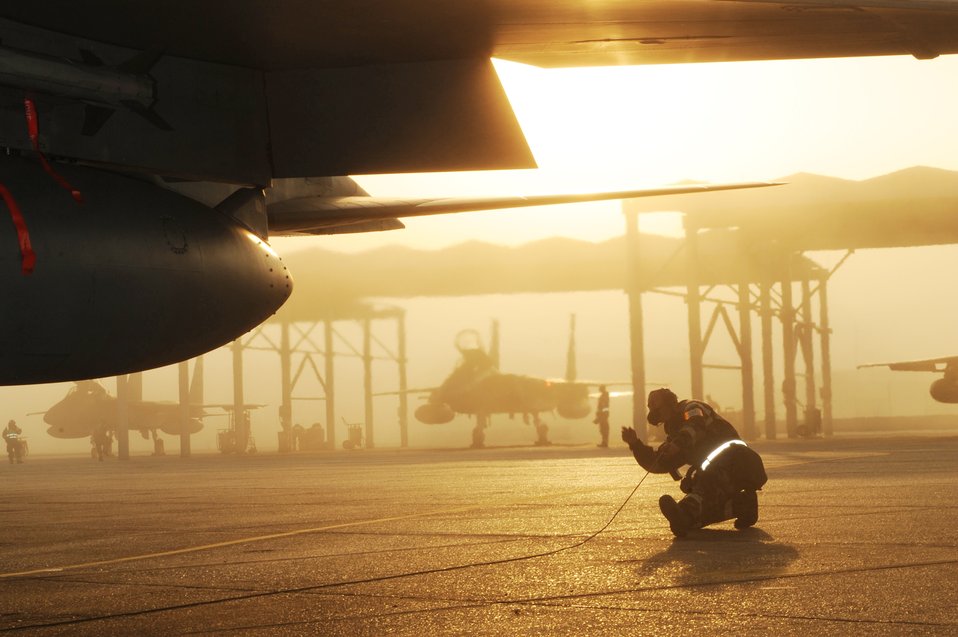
By the dawn's early light

Master Sgt. Troy Fontenot inspects the aileron movement of an F-15 Eagle during an operational readiness inspection April 17, 2010, at Naval Air Station Joint Reserve Base New Orleans, La. Sergeant Fontenot is a crew chief with the Louisiana Air National Guard's 159th Fighter Wing.